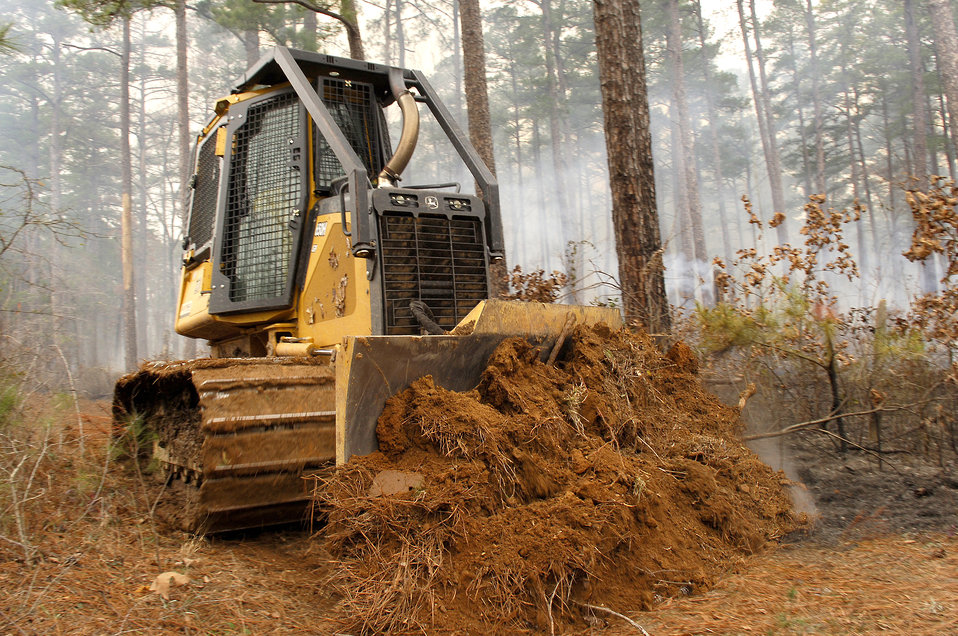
Controlled burn

BARKSDALE AFB, La. (AFPN) -- Phillip Bell drives a bulldozer to create a fire break to help contain controlled burning. The 200-acre burn Jan. 26 was a timber stand improvement burn, and is one of 10 scheduled controlled burns on Barksdale's East Reservation this year. The burning is conducted to reduce overall fire fuel on the ground, which in turn helps prevent forrest fires. Mr. Bell is a wildlife technician here.